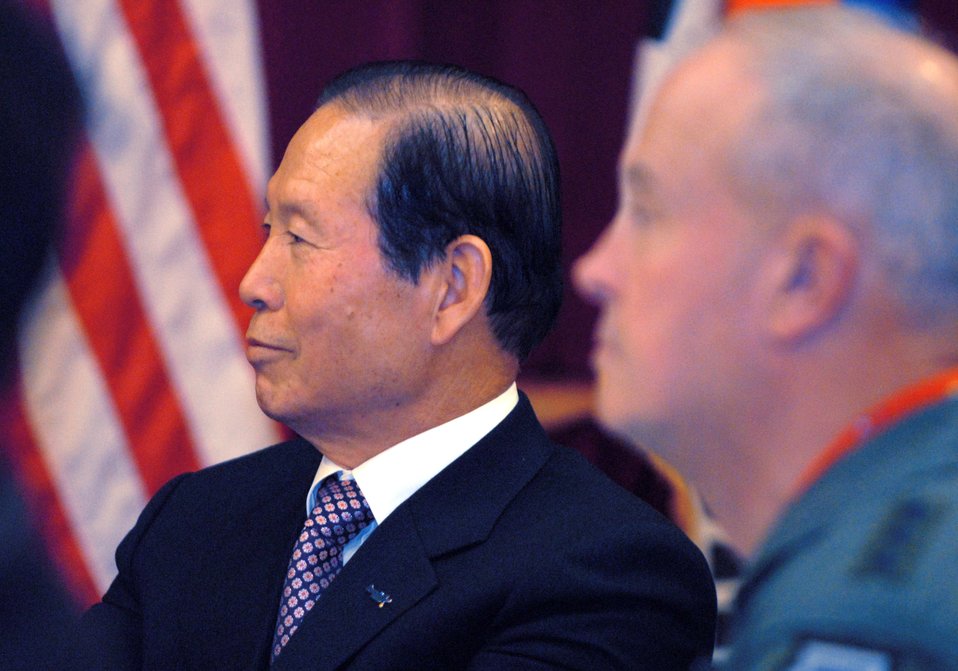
South Korean civic leaders gain insight on Air Force mission

Gunsan Mayor Dong Shin Moon (left) and Lt. Gen. Stephen G. Wood listen to a speaker during lunch Jan. 8 at Osan Air Base, South Korea. Officials from 7th Air Force hosted Gunsan civic leaders in support of the Good Neighbor Program where Kunsan Air Base, South Korea, is educating local civic leaders on the 7th Air Force and 8th Fighter Wing missions while demonstrating how the U.S. Air Force works and trains with South Korean to maintain peace and stability in the region.